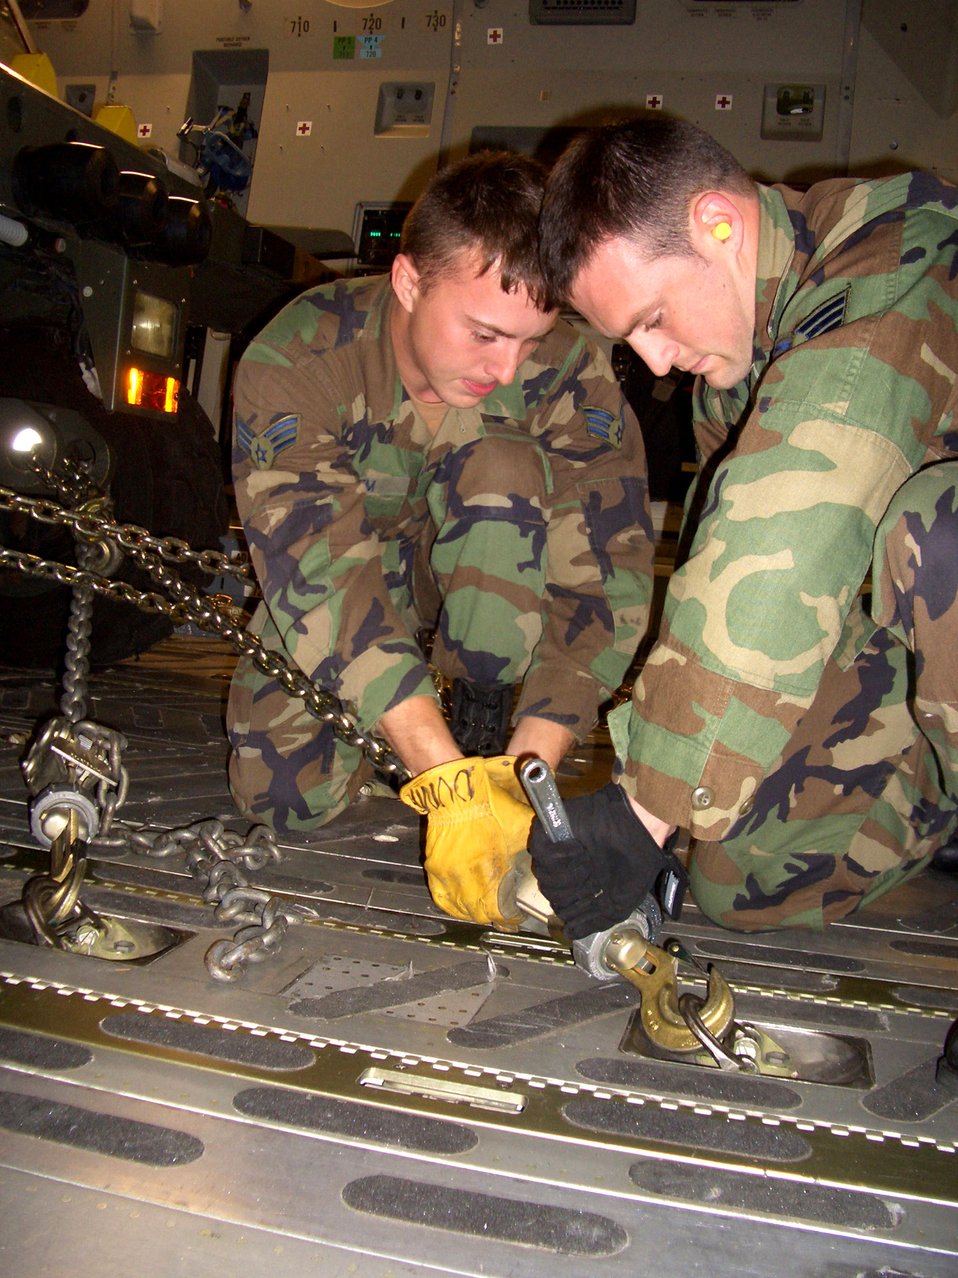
AMC assists earthquake response

MCGUIRE AIR FORCE BASE, N.J. -- Senior Airmen Regis Dumm and Clint Kubach tie and secure a vehicle to the floor of a C-17 Globemaster III bound for Pakistan. The aircraft, loaded with relief supplies and members of the 621st Contingency Response Wing, left here Oct. 10. Both Airmen are assigned to the 305th Aerial Port Squadron here.